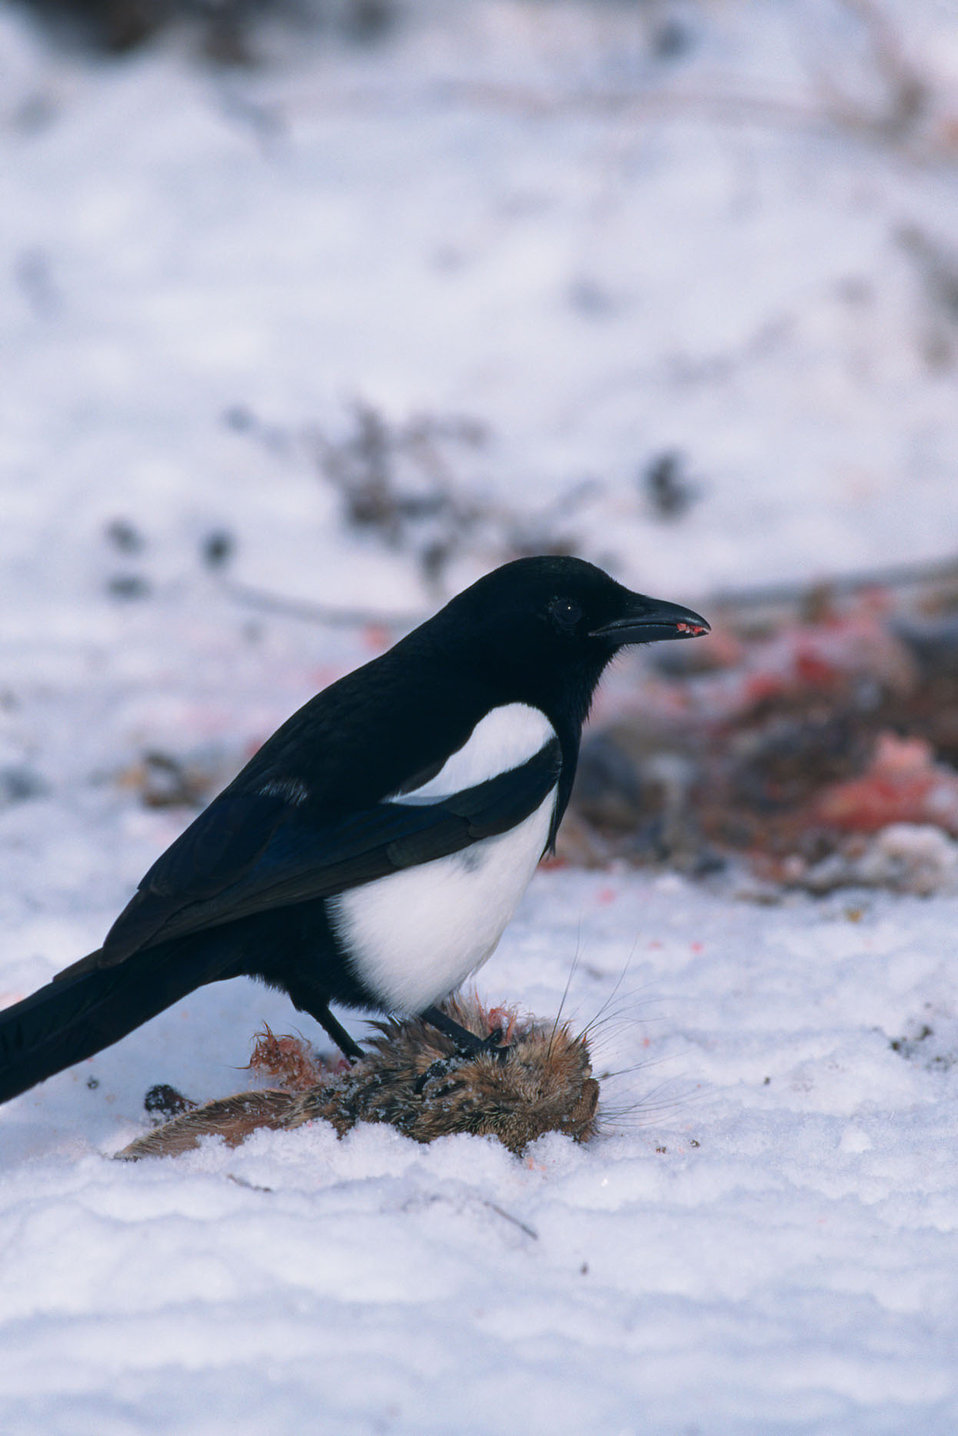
Black-billed magpie

A black-billed magpie rests on a rock in the snow.